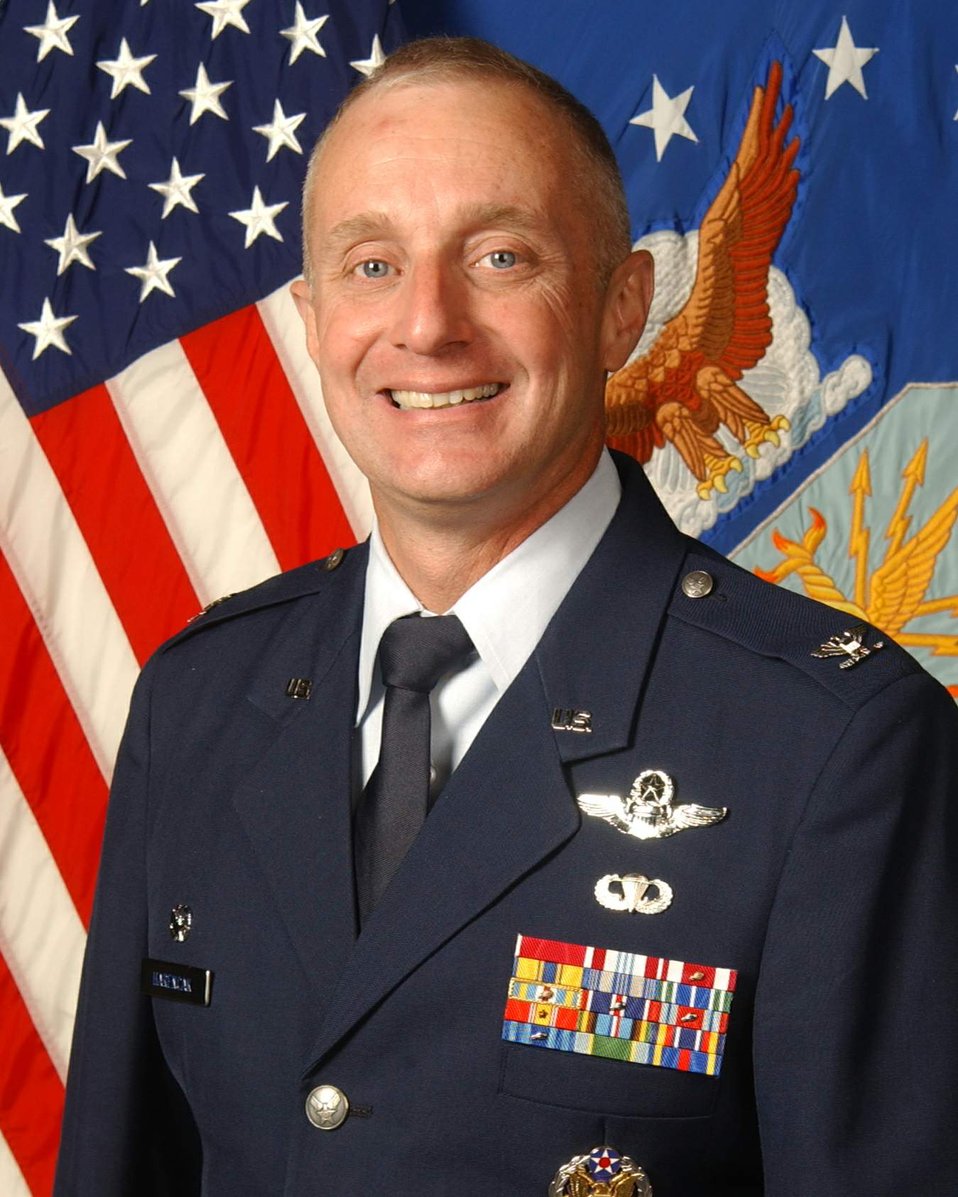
Col. Garrett Harencak, 509th Bomb Wing commander

Col. Garrett Harencak is the current 509th Bomb Wing commander.